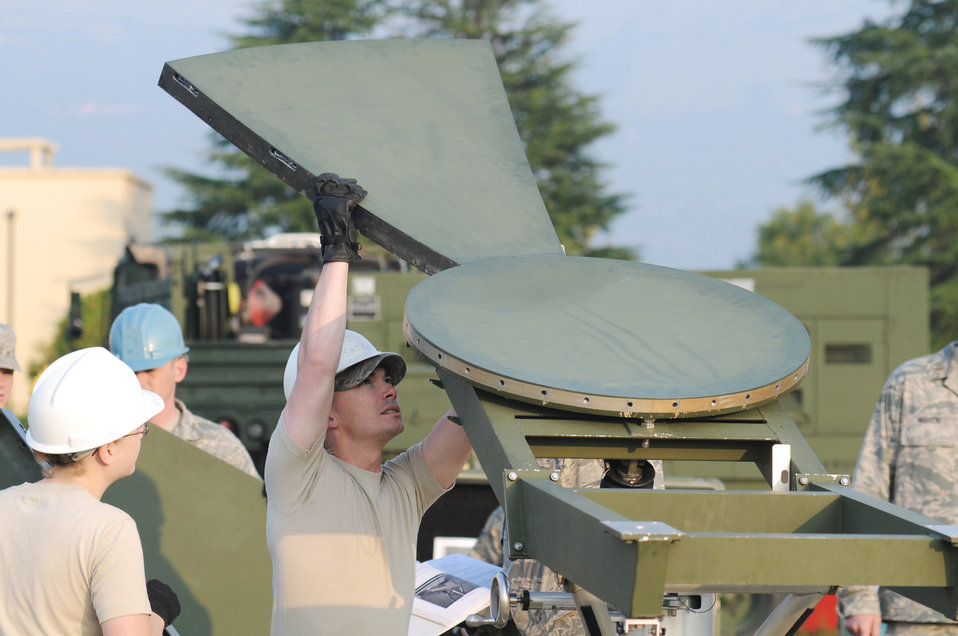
Comm Training

Tech. Sgt. Jonathan Gifford, a 1st Combat Communications Squadron ground and radio maintainer from Ramstein Air Base, Germany, inserts the first panel into the center hub of a satellite dish Sept. 22, 2009, during a training exercise at Aviano AB, Italy. Sergeant Gifford and other radio and satellite communications Airmen on his team conducted cross-flow training in preparation for the upcoming merger into the new transmission systems career field in October 2009.